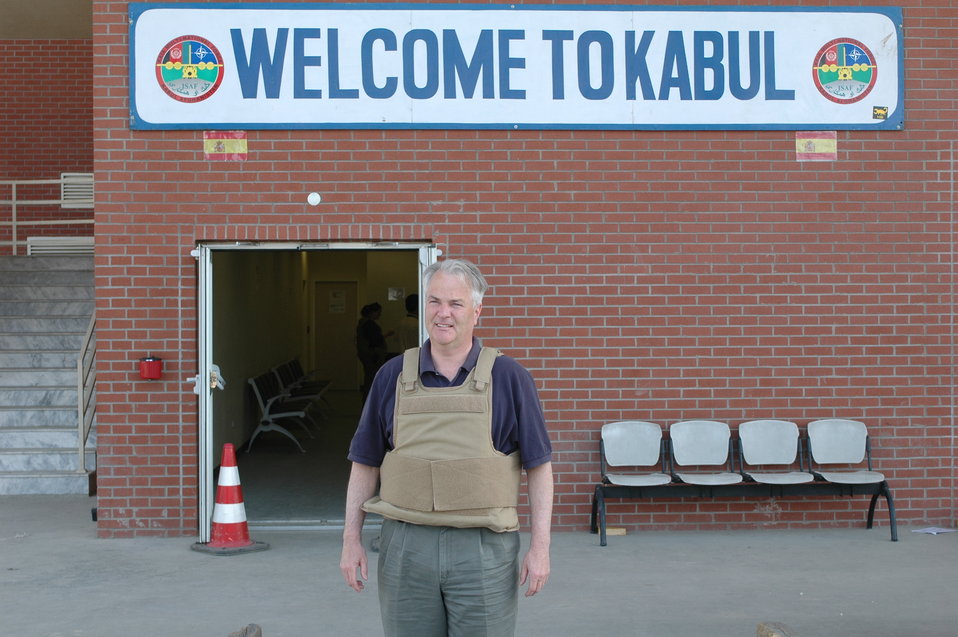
CODEL Berman